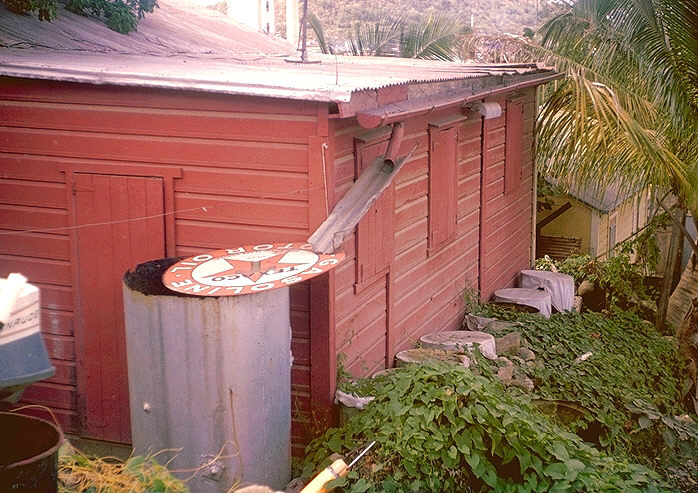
Large water receptacle not adequately covered to prevent mosquito breeding, St. Thomas, Virgin Islands.